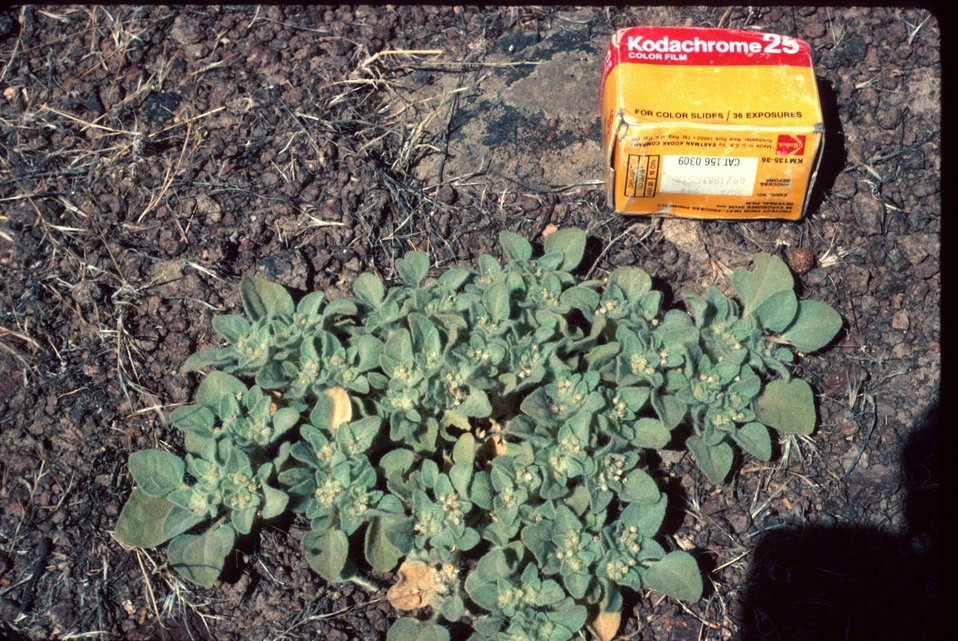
Eremocorpus setigerus Dove Weed near Hot Creek, near MT. Home, Idaho Wildflower